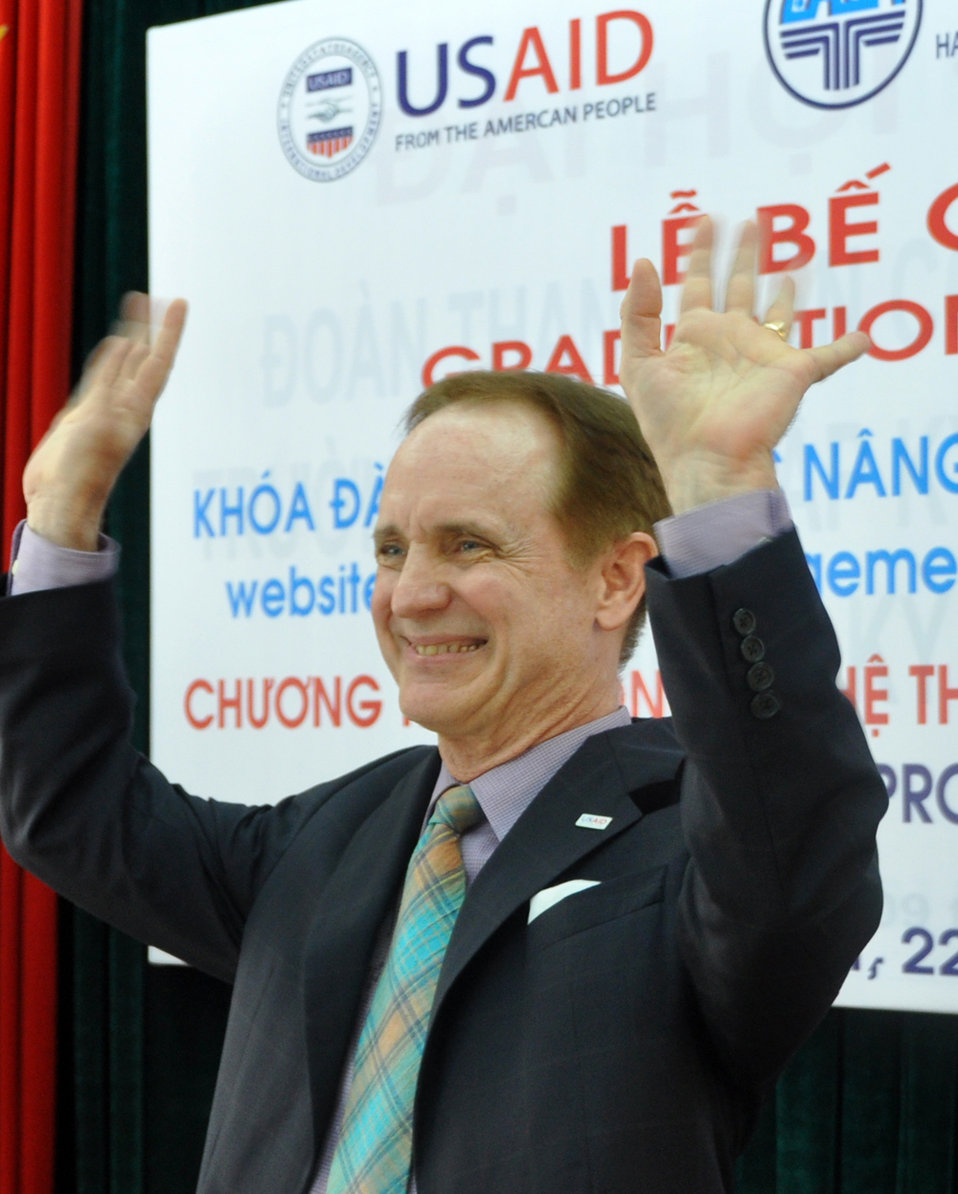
USAID Mission Director Francis Donovan participates in graduation of IT students in Hanoi on June 22, 2011.